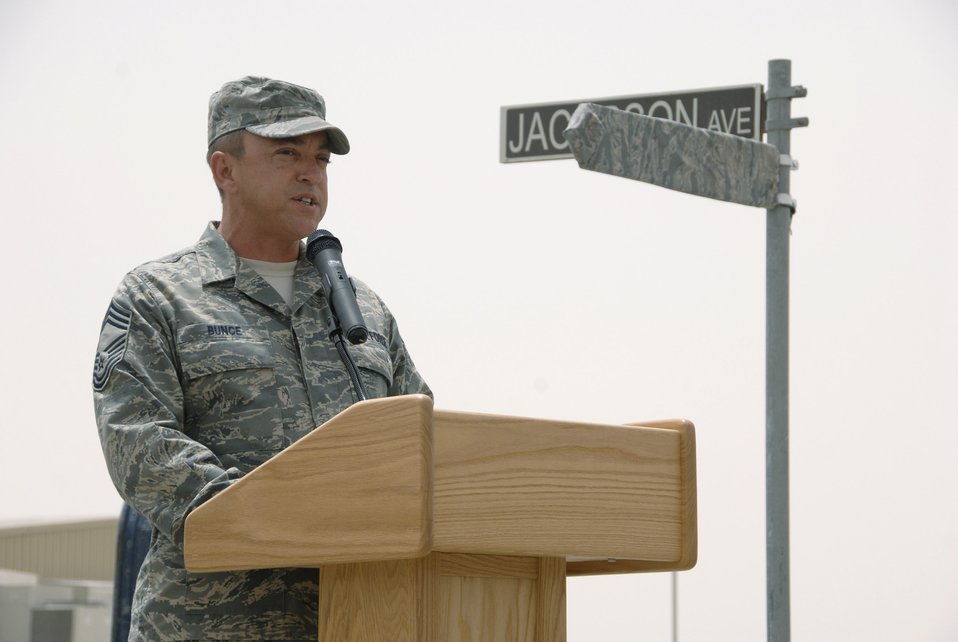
In his honor: Street named for Airmen killed in action

Chief Master Sgt. Richard Bunce speaks during a street dedication ceremony June 10 in Southwest Asia. The ceremony is a tribute to Airman 1st Class Eric Barnes and his family, with the naming of Barnes Road. Airman Barnes, 20, of Lorain, Ohio, died June 10, 2007, as a result of an improved explosive device attack on an Air Force convoy about 100 miles south of Baghdad, Iraq. He was deployed from the 90th Logistics Readiness Squadron at F.E. Warren Air Force Base, Wyo. Chief Bunce is the 100th Logistics Readiness Squadron chief enlisted manager.